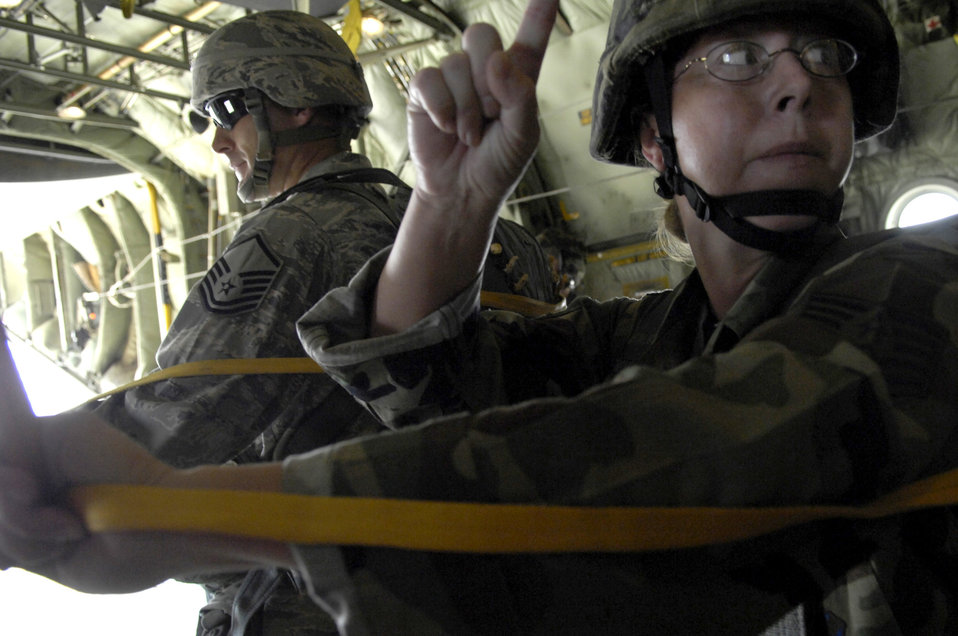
Jump training at Lackland AFB

Tech. Sgt. Monica Schleich signals the one-minute wait as Master Sgt. Jamie Newman prepares to jump out of a Marine C-130 Hercules as it flies over Lackland Air Force Base, Texas, July 23. Sergeant Newman is from Fort Benning, Ga., and Sergeant Schleich is attached to the 342nd Training Squadron at Lackland AFB.